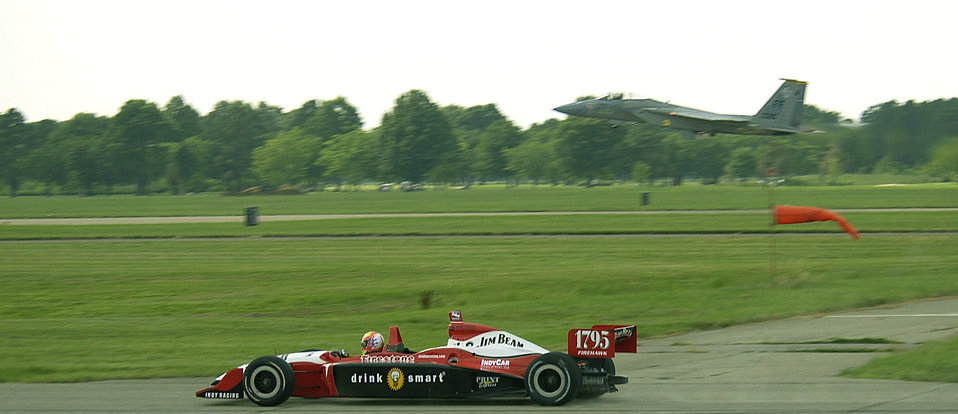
Faster than a speeding...

LANGLEY AIR FORCE BASE, Va. -- Maj. Bret Anderson flies his F-15 Eagle past IndyCar driver Dan Weldon during a race here June 22. The F-15 won the half-mile, 17-second race, crossing the finish line yards ahead of the car before heading off on a training mission. The Air Force supports events like this to boost morale and aid in recruiting.